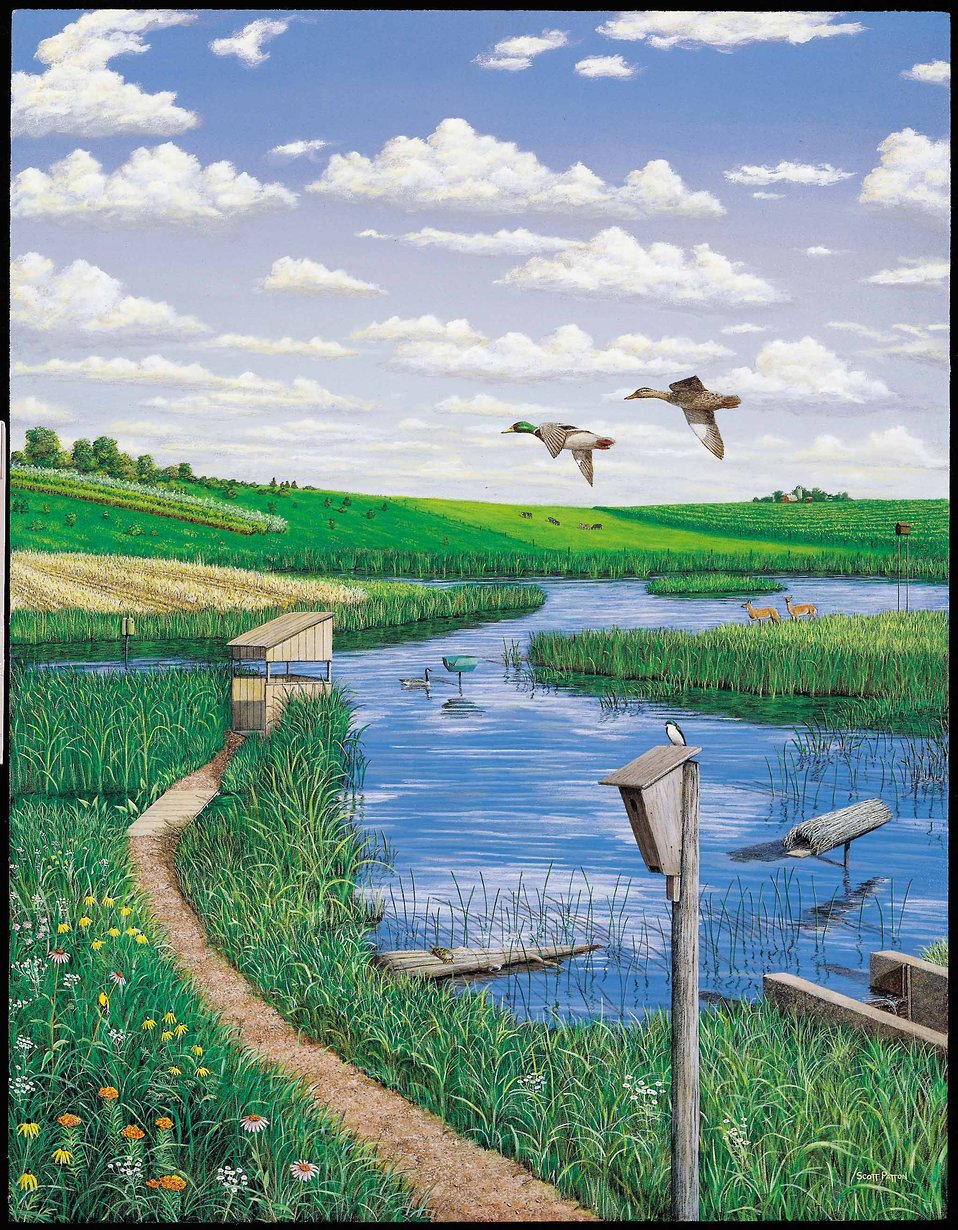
Artist depiction of the numerous enhancements a wetland owner can make to promote more wildlife in a wetland.